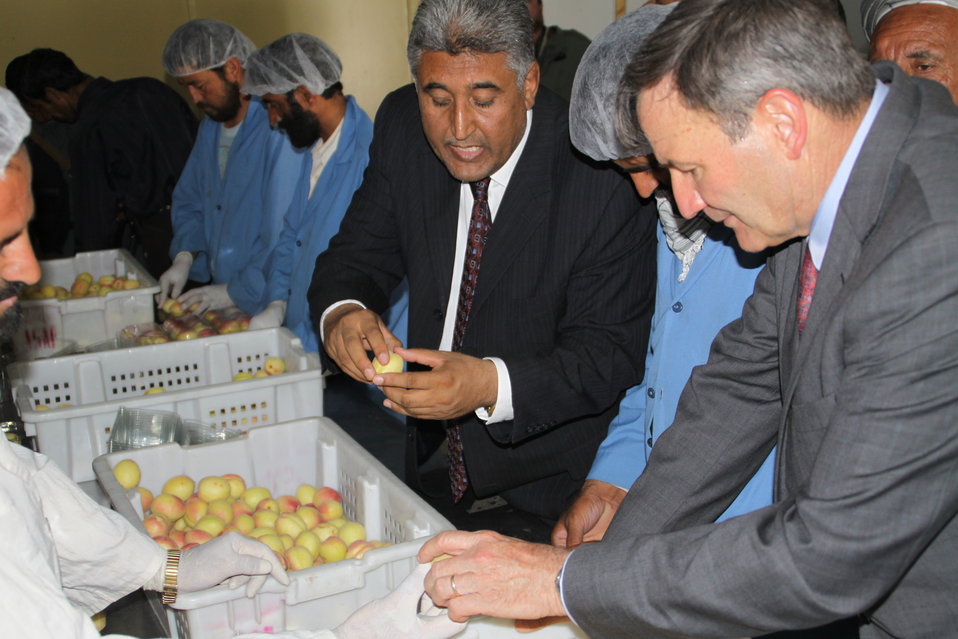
Badam Bagh Farm